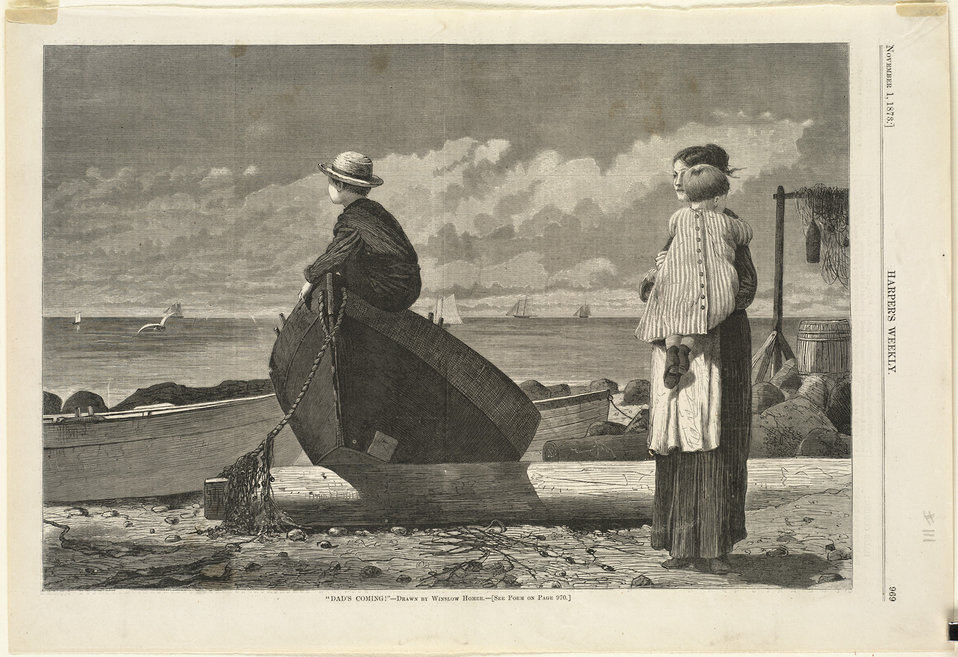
File name: 10 09 000111 Title: 'Dad's coming!' Creator/Contributor: Homer, Winslow, 1836-1910 (artist) Date issued: 1873-11-01 Physical description: 1 print : wood engraving Genre: Wood engravings; Periodical illustrations Notes: Published in: Harper's Weekly, Volume XVII, 1 November 1873, p. 969.; Drawn by Winslow Homer. Collection: Winslow Homer Collection Location: Boston Public Library, Print Department Rights: No known restrictions
Flickr data on 2011-08-11: Camera: Sinar AG Sinarback 54 FW, Sinar m Tags: Winslow Homer User: Boston Public Library BPL